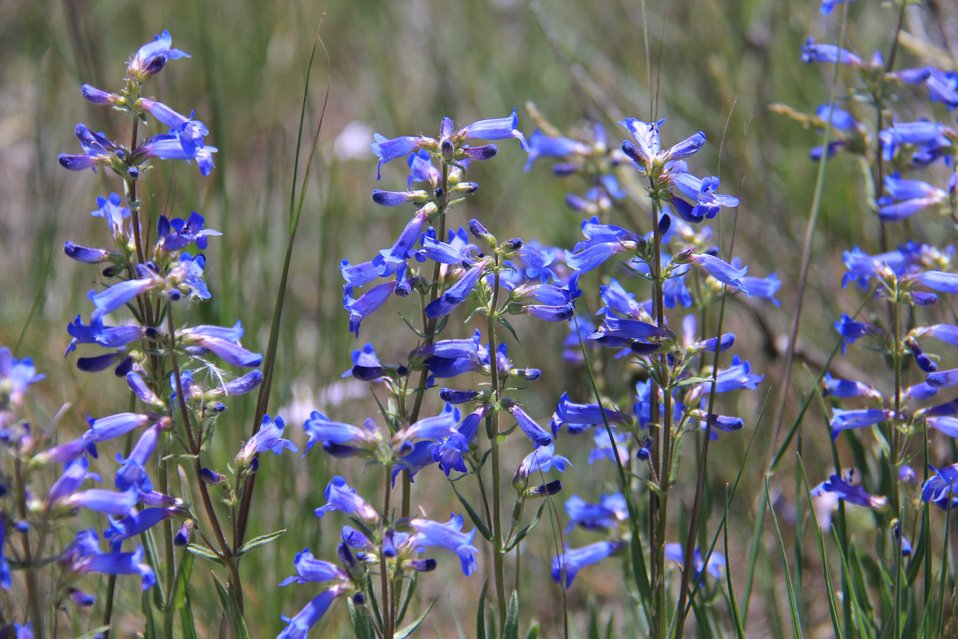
Shades of Blue

There are so many shades of blue, but that of the penstemon blooming on the National Elk Refuge has to be one of the loveliest!

Credit: USFWS / Ann Hough, National Elk Refuge volunteer